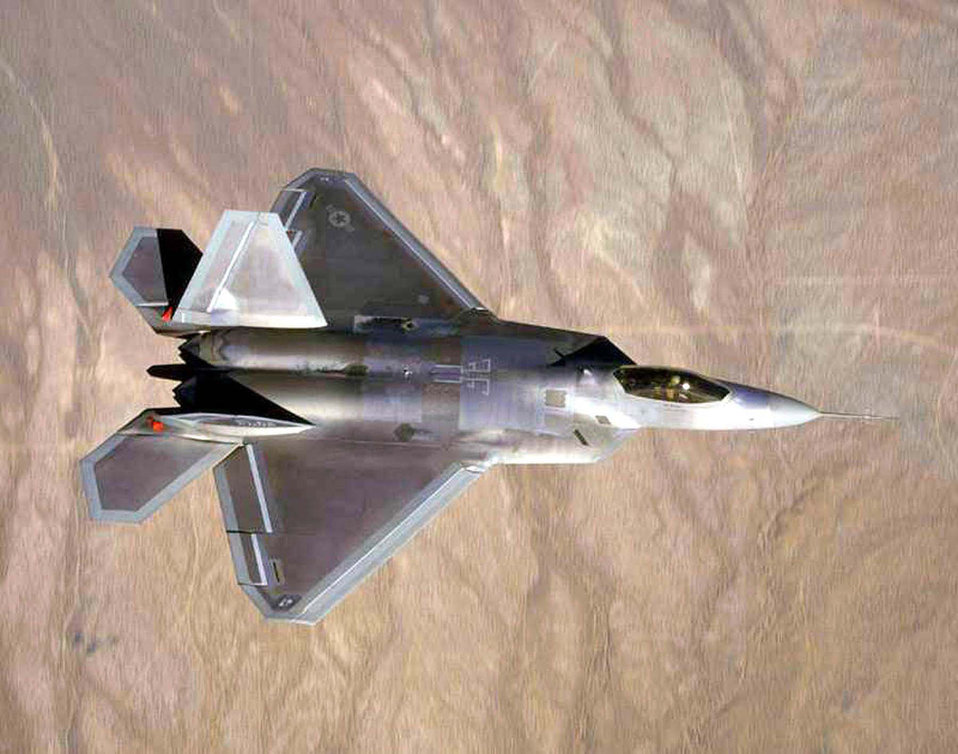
Raptor 4002

EDWARDS AIR FORCE BASE, Calif. -- Raptor 4002 passed its 300th flight-hour mark sortie from the Air Force's Flight Test Center here. The F/A-22 fleet is expected to grow in the coming weeks, as Raptor 4003 makes it maiden flight from Lockheed Martin's facility in Marietta, Ga., before joining the F/A-22 Combined Test Force here later this year.